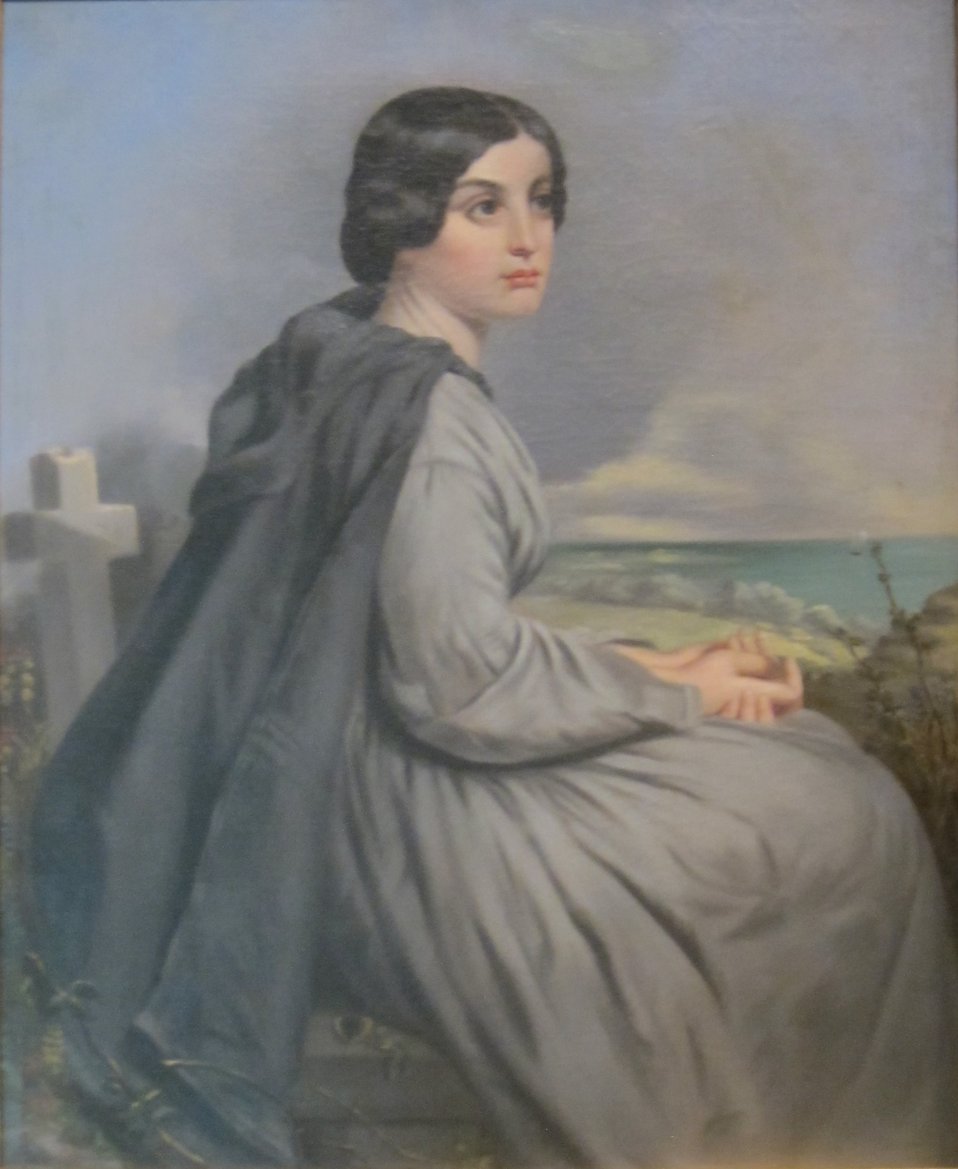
'Civil War Widow' by Charles Soule, Jr., Dayton Art Institute